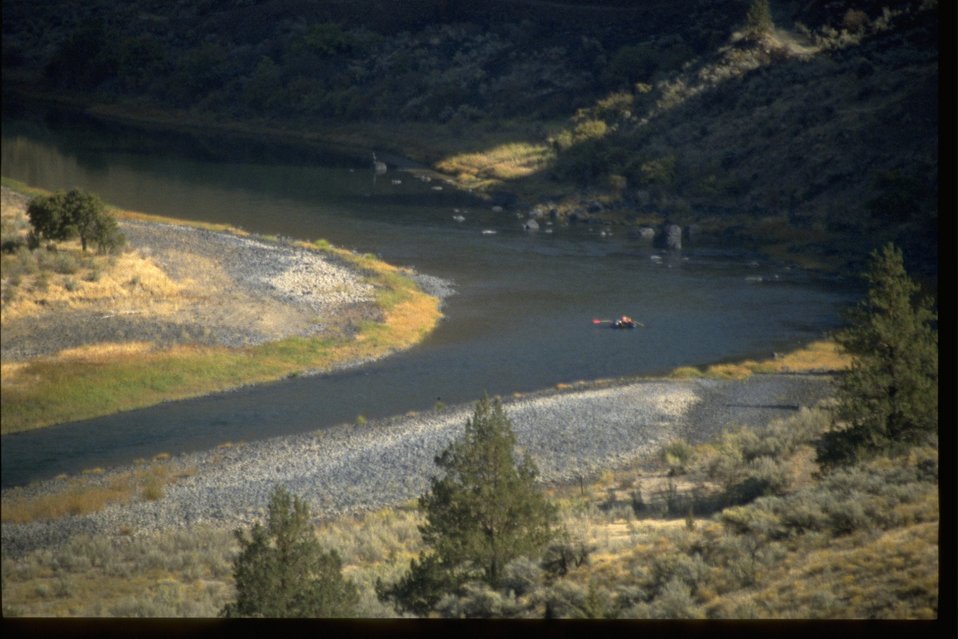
Photo in a seven series collection of a rafter on the John Day River. Heron perched on small rock island.